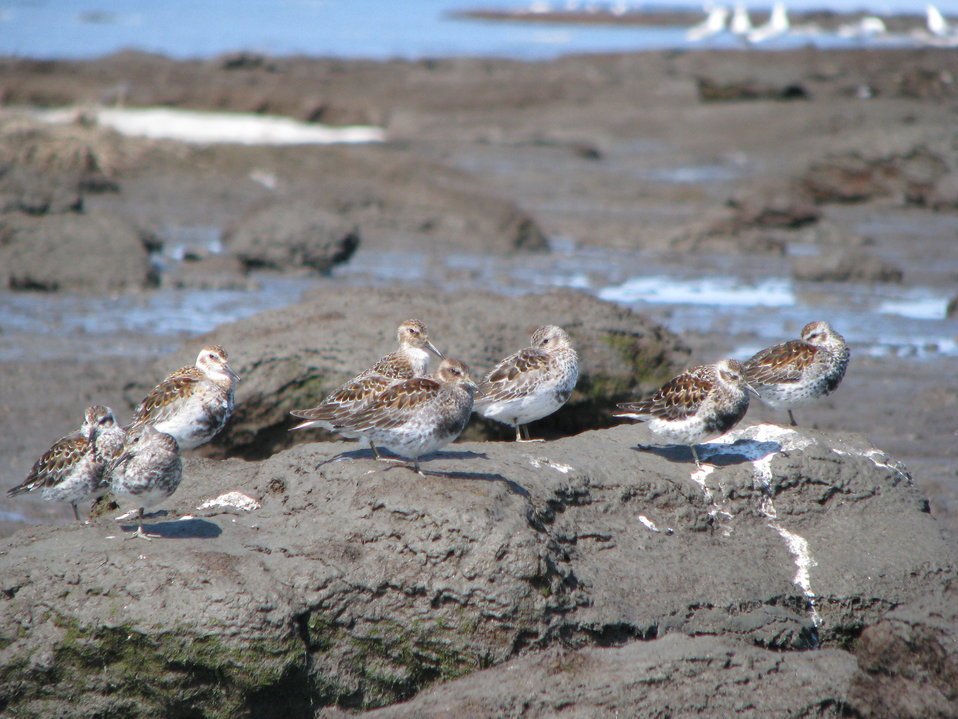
Rock sandpipers

Yukon Delta NWR